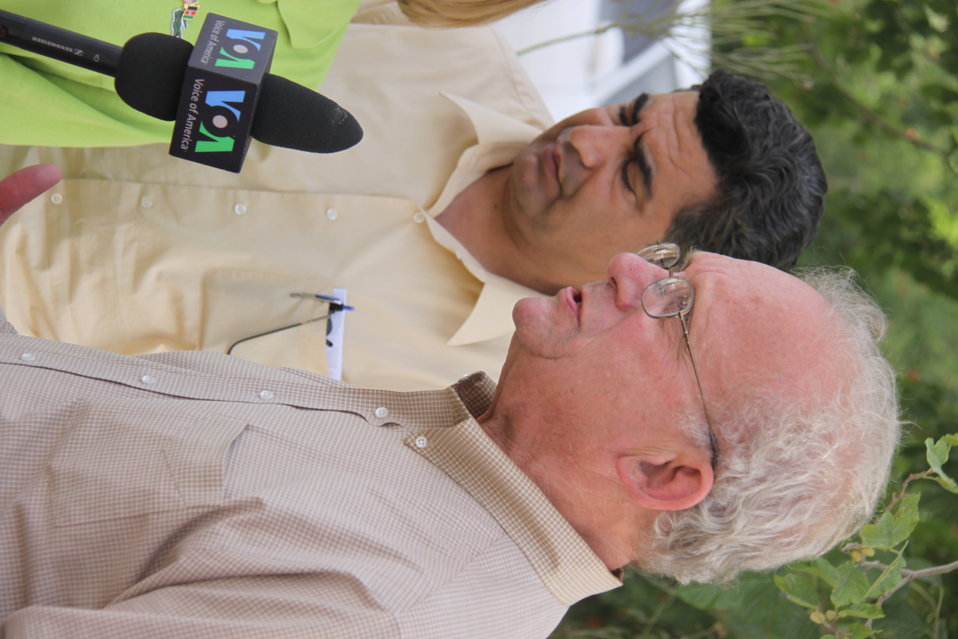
Meeting with Local Leaders in Kandahar